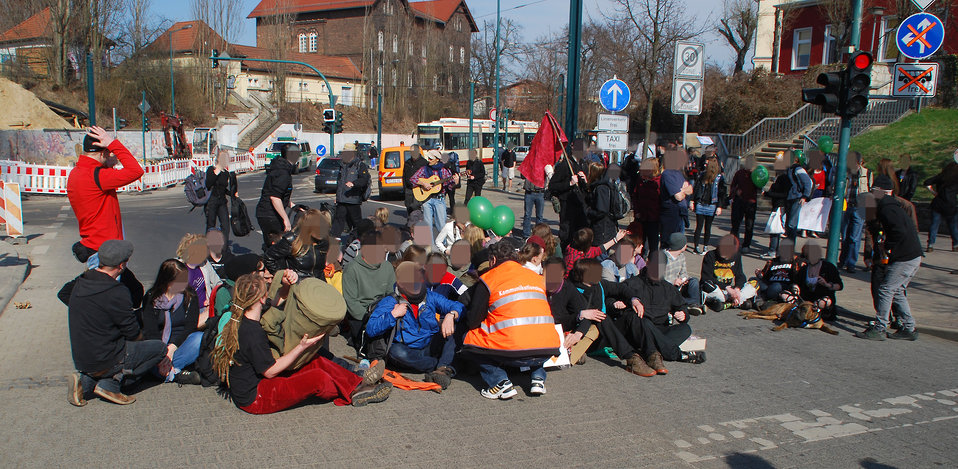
Proteste gegen den Nazi-Aufmarsch am 24.3.2012 in Frankfurt (Oder)